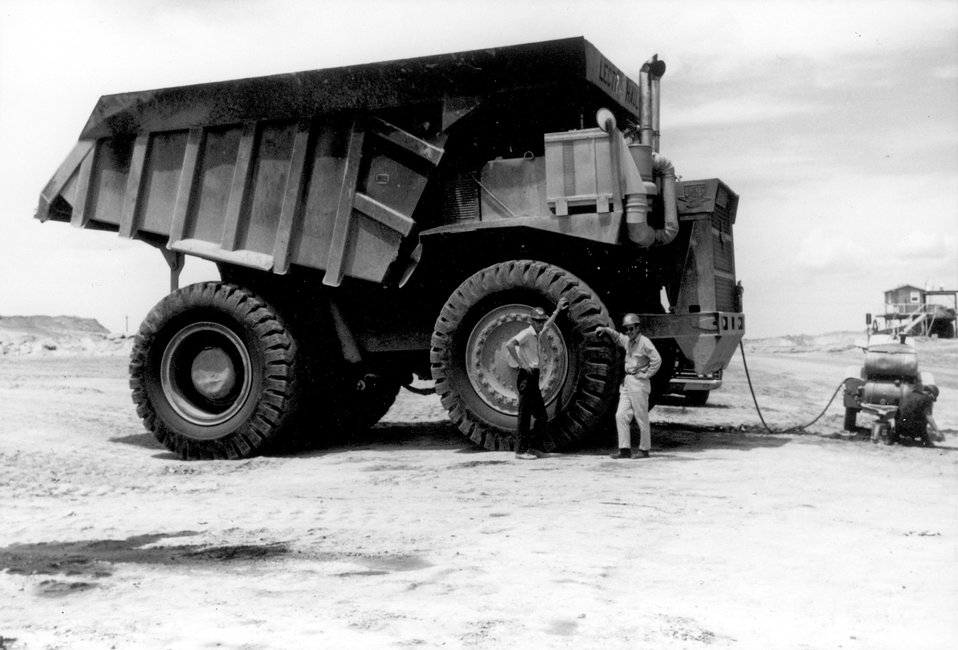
Uranium is found mostly in deposits of uraninite, coffinite, and brilliantly colored minerals irregularly disseminated in sand stones of the Western States. c. 1971